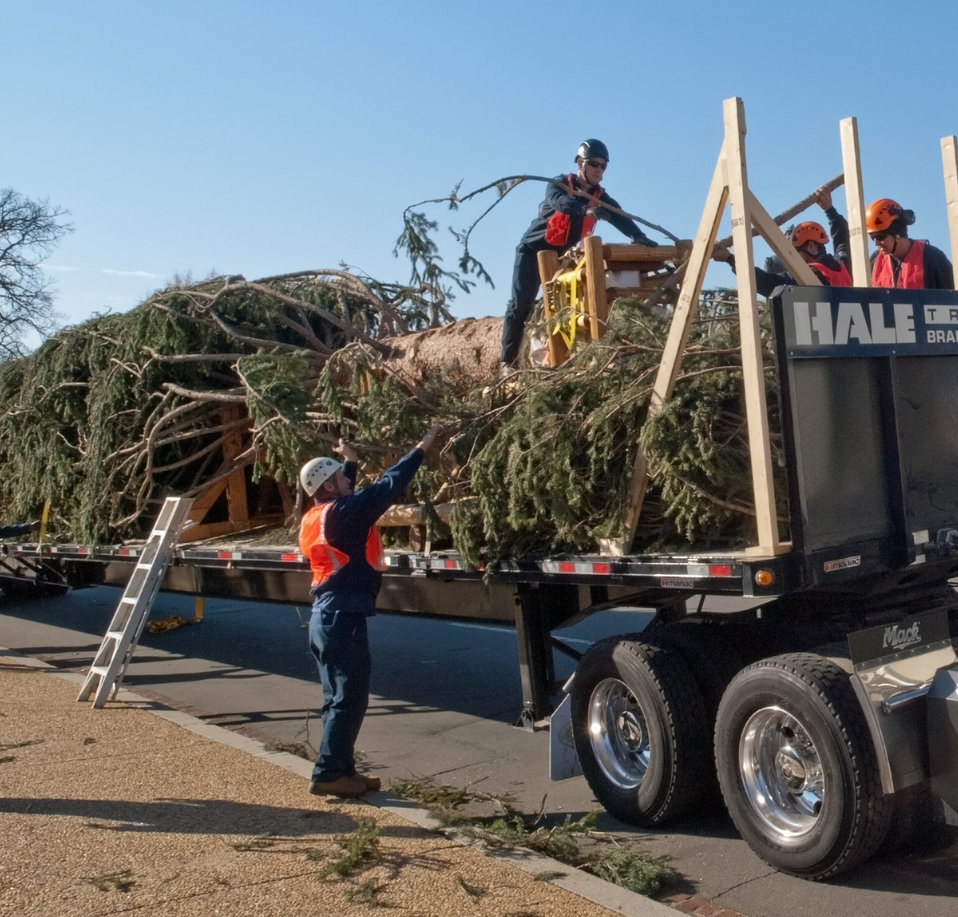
Members of the grounds crew of the Capitol prepare to remove the 2012 Capitol Christmas Tree from its truck after it arrives in Washington, D.C. on Nov.26, 2012. The 73-foot Englemann spruce traveled from the White River National Forest in Colorado.